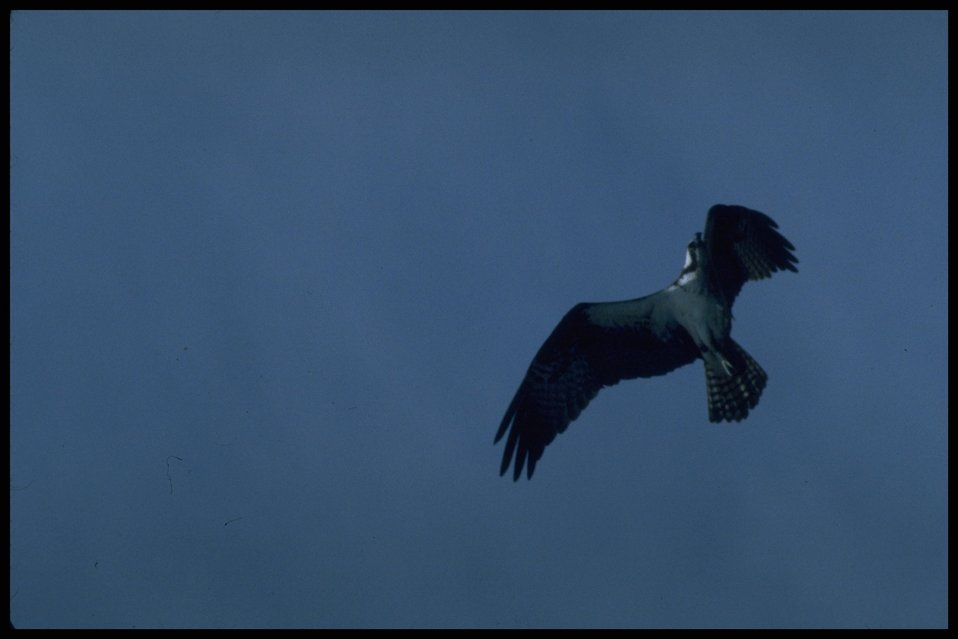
Far shot of Osprey in flight. Lakeview District.